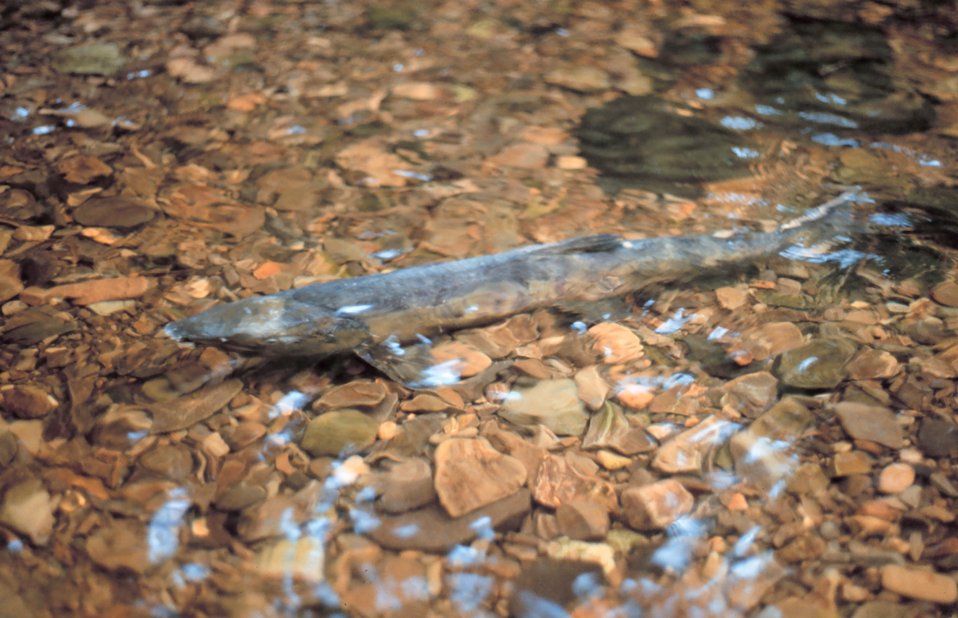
Spawning salmon